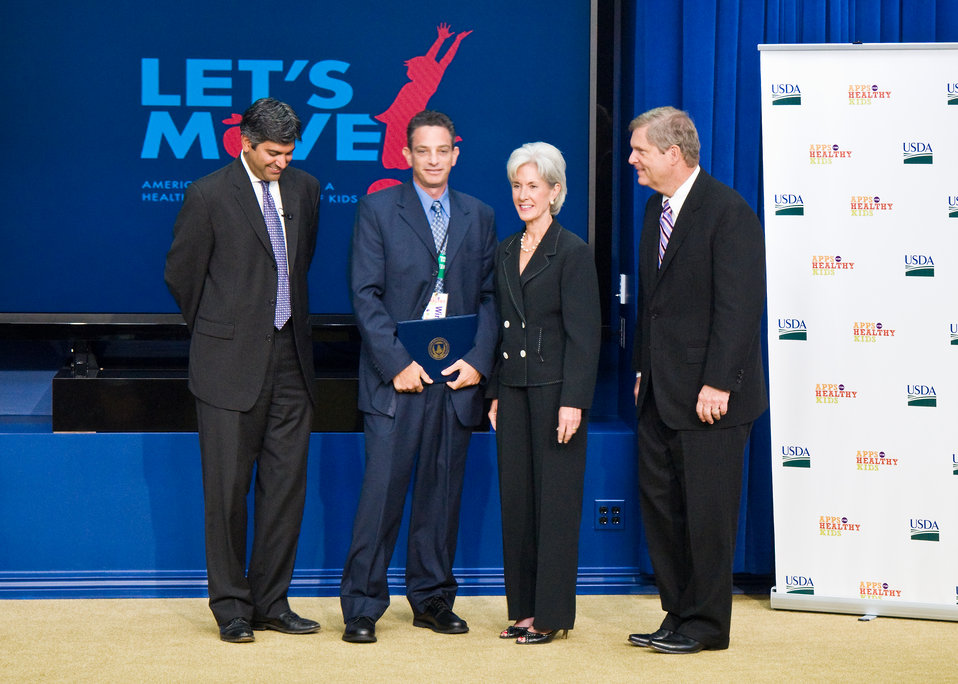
Aneesh Chopra, White House Chief Technology Officer, Health and Human Services Secretary Kathleen Sebelius and Agriculture Secretary Tom Vilsack present the Third Prize to Jeffrey Schwartz, Willow Spring, North Carolina the developer of the app 'Snack Neutralizer,' of The Apps for Healthy Kids competition at the White House, in Washington, DC, on Wednesday, September 29, 2010. The Apps for Healthy Kids competition is part of First Lady Michelle Obama’s Let’s Move campaign to end childhood obesity within a generation. The competition challenges software developers, game designers, students and other innovators to develop fun and engaging software tools and games to urge children, especially “tweens” (children ages 9-12) – directly or through their parents – to eat better and be more physically active. The challenge of 'Snack Neutralizer,' is to be 'snack neutral.' You may choose your snack, however you may work it off over the course of the day. The Snack Neutralizer is a tool designed to be used in the classroom and opens up students' eyes to the consequences, both good and bad, associated with what you eat. USDA Photo 10di1506-123 by Bob Nichols.